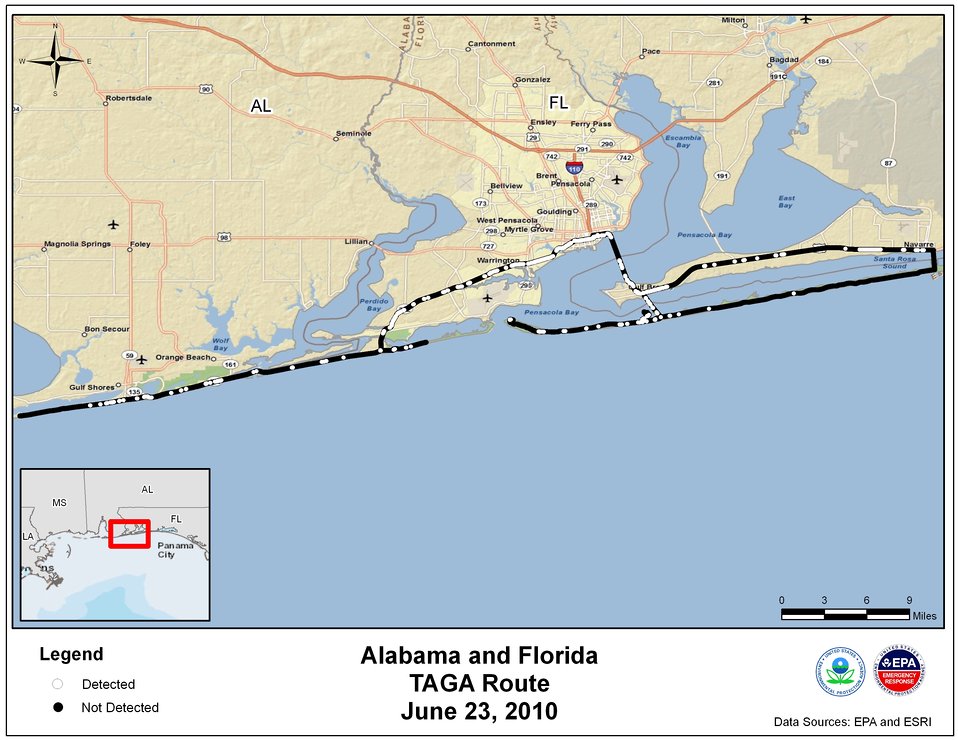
EPA TAGA Air Monitoring Locations June 23, 2010